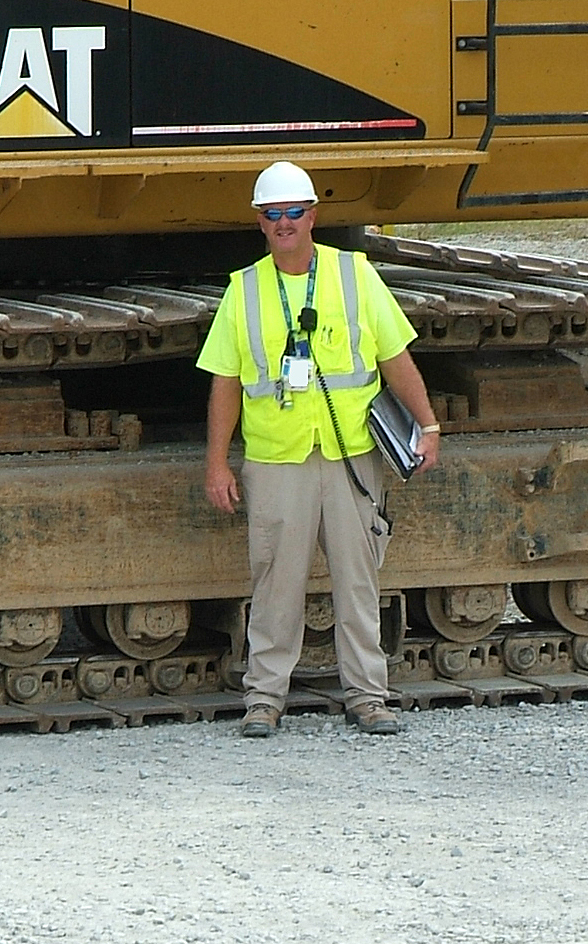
Brad Morgen - Paducah

Brad Morgan stands in front of heavy equipment used to demolish the East End Smelter in September 2010. The Recovery Act worker supervised cleanup and destruction of the smelter before leaving the Paducah Site in January 2011 to work at International Specialty Products in Calvert City.